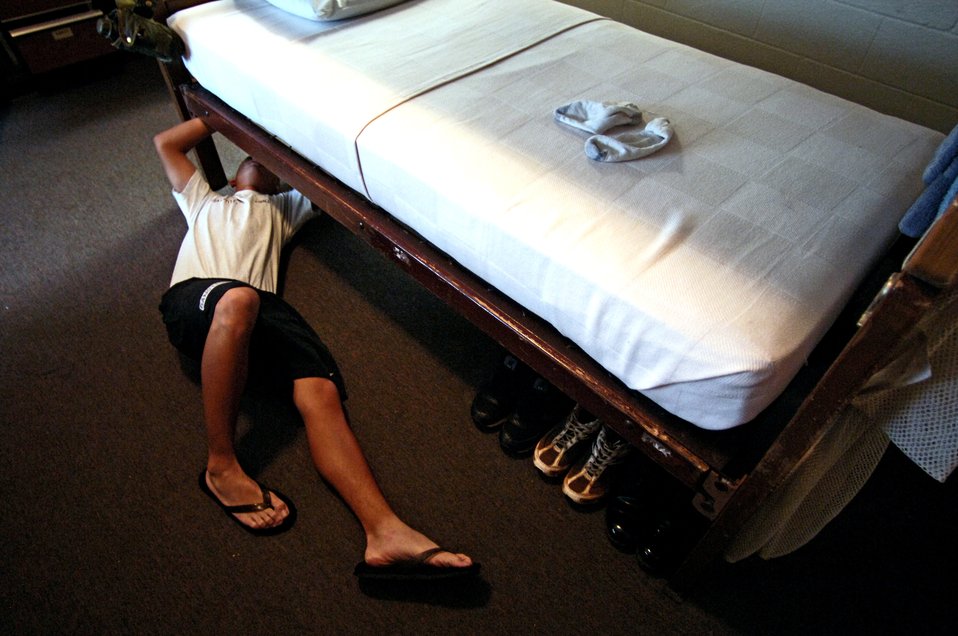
National Guard program helps at-risk teens

A cadet pulls his sheets tight to get his bed ready for inspection on Thursday, May 18, 2006 at the Hawaii National Guard Youth Challenge Academy in Kapolei, Hawaii. The academy staff teach life skills to non-traditional students so they can be successful in the community and earn a high school diploma.